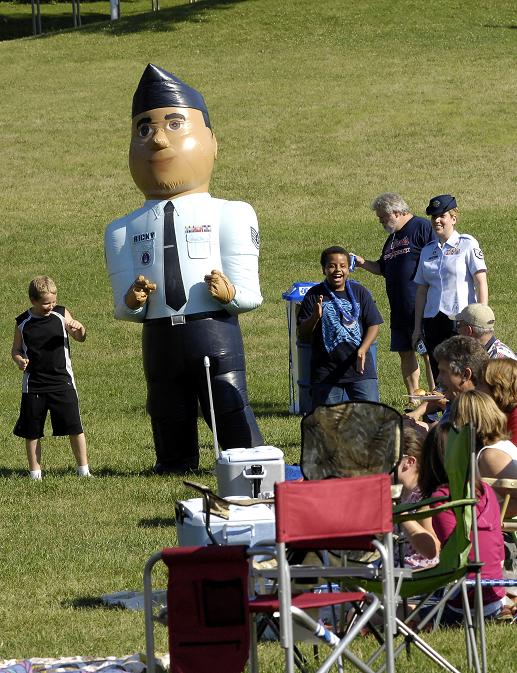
Air Force Week St. Louis

Tech Sgt. Tracy Bennett and spectators look on as Ricky the Recruiter dances with a few children at the Jefferson Barrack Blast, July 3, 2007. St. Louis County, in partnership with the Air Force during Air Force Week, put on the blast, entertaining the more than 20,000 in attendance.